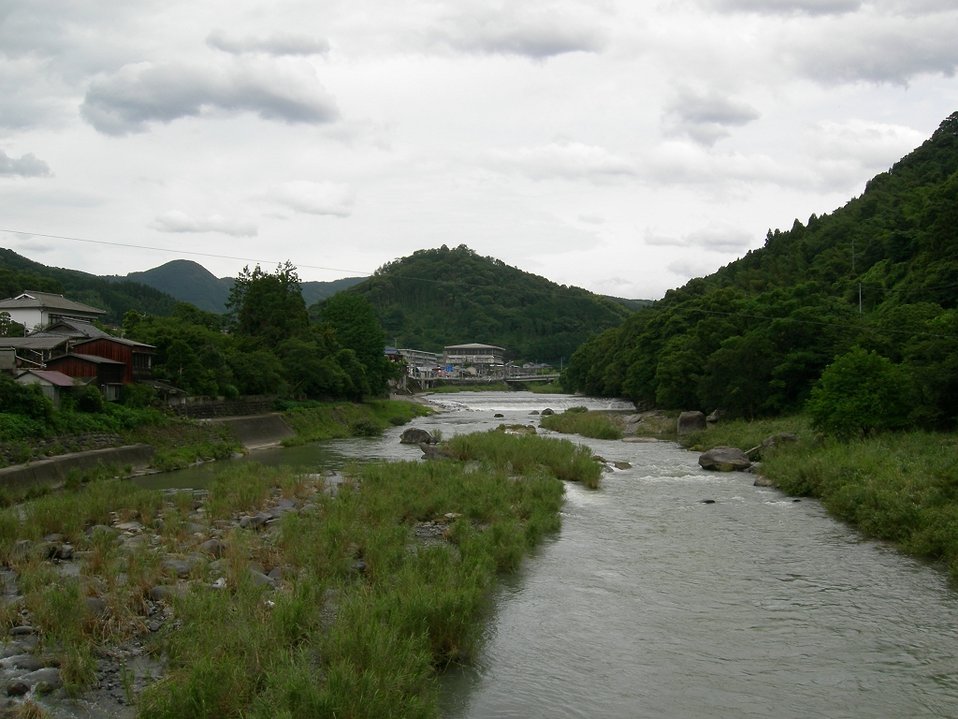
Yabe River 日本語: 矢部川